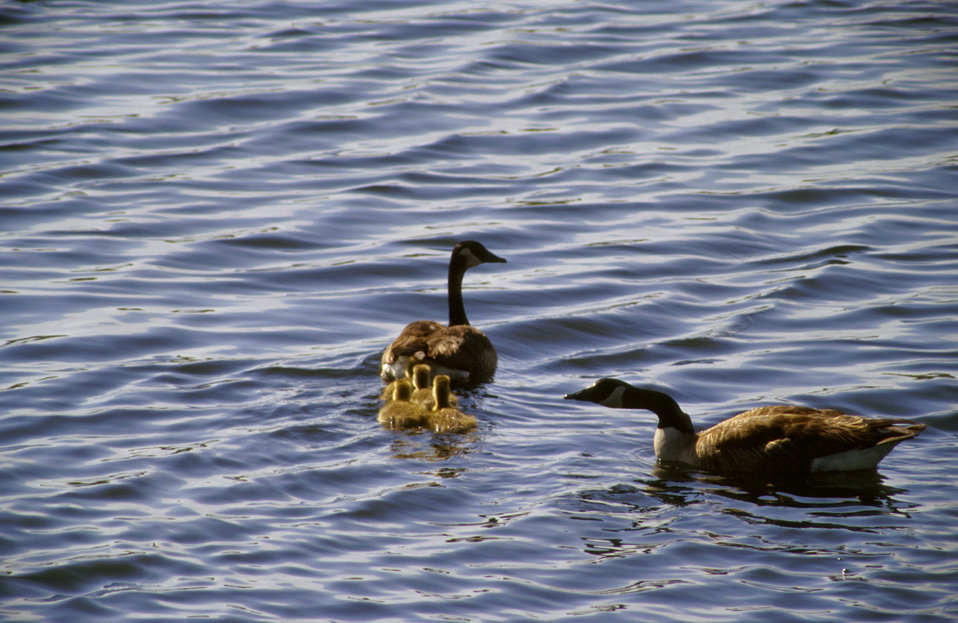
Canada Geese with Chicks

A group of goslings follow closely behind a female Canada Goose.